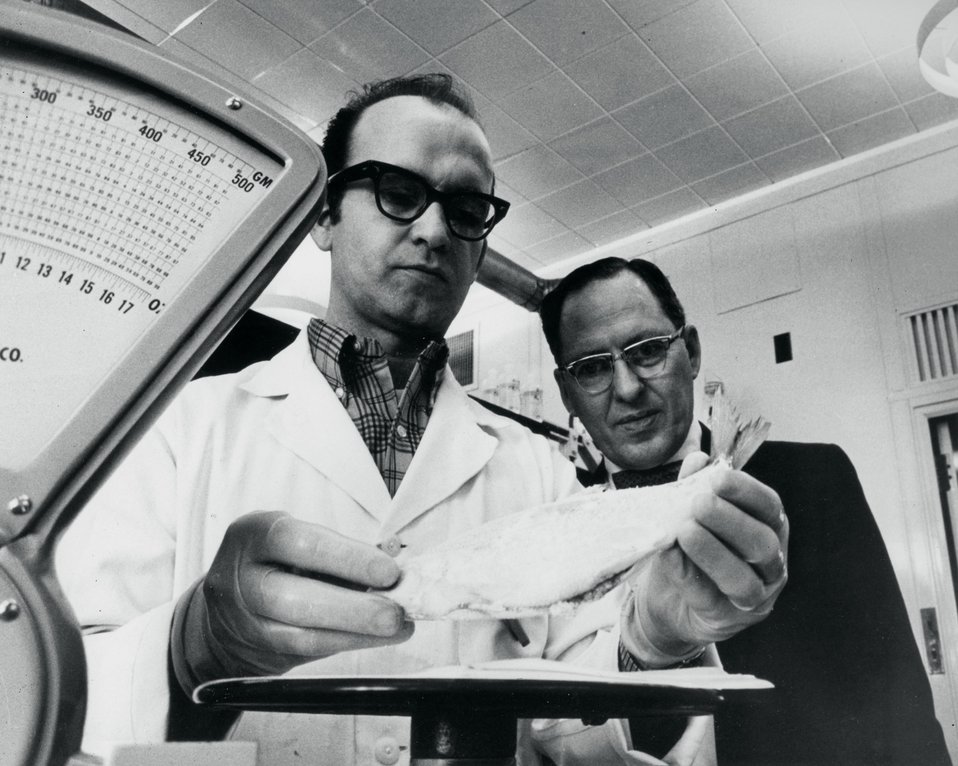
A fish taken from Lake Michigan is 'weighed-in' at Argonne. C.1970